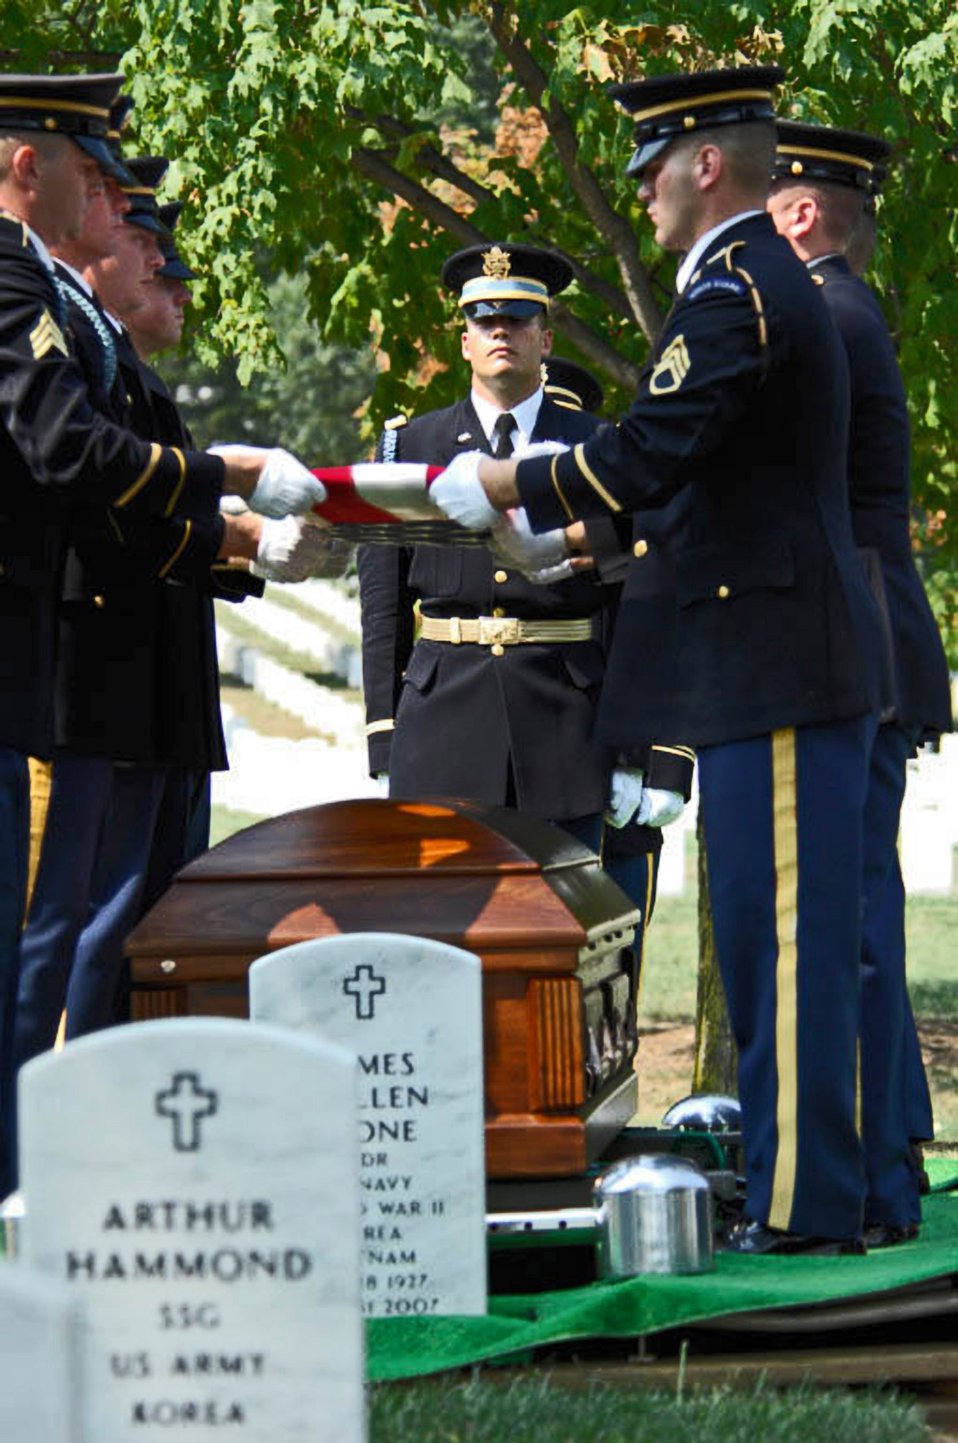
World War II B-24 pilot's remains laid to rest at Arlington

Army Color Guard members fold a flag from the casket of 2nd Lt. Harold E. Hoskin during a burial ceremony Sept. 7 at Arlington National Cemetery in Virginia. Lieutenant Hoskin was one of five men who were flying in a B-24 Liberator that crashed while on a test flight Dec. 21, 1943, out of Ladd Field in Fairbanks, Alaska. Lieutenant Hoskin's remains were discovered in August 2006 and identified in April 2007.